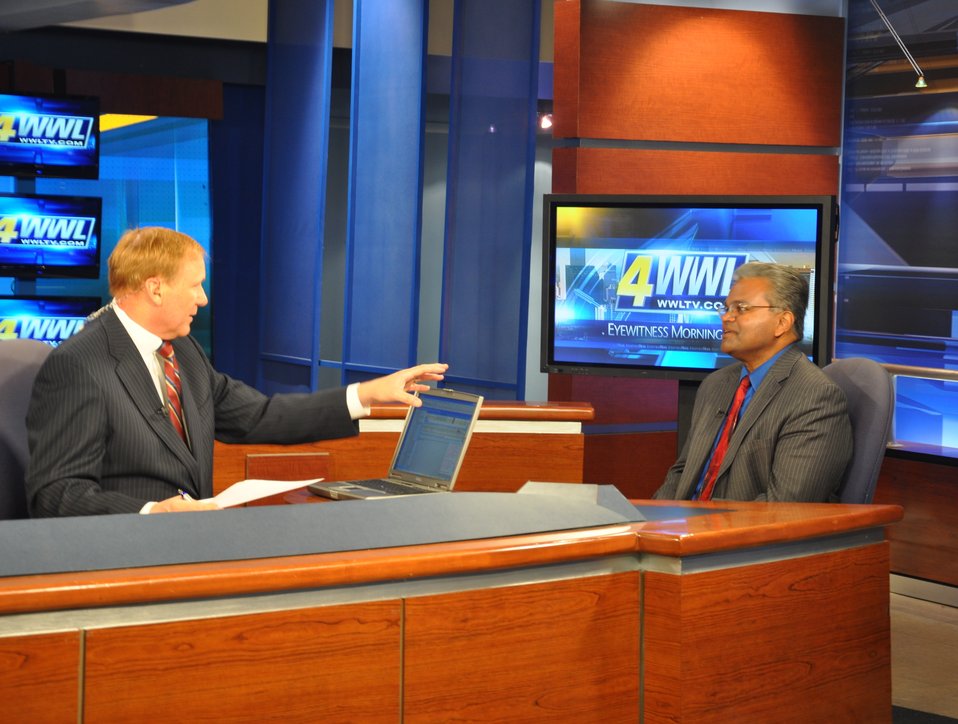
June 21, 2012 EPA Job Training Announcement, New Orleans

EPA Office of Site Remediation and Emergency Response Administrator, Mathy Stanislaus, joined WWL TV Morning Show Co-Anchor Eric Paulsen to discuss new job training funding available from EPA.

See the interview

Environmental Workforce Development and Job Training Grant Program

Press Release